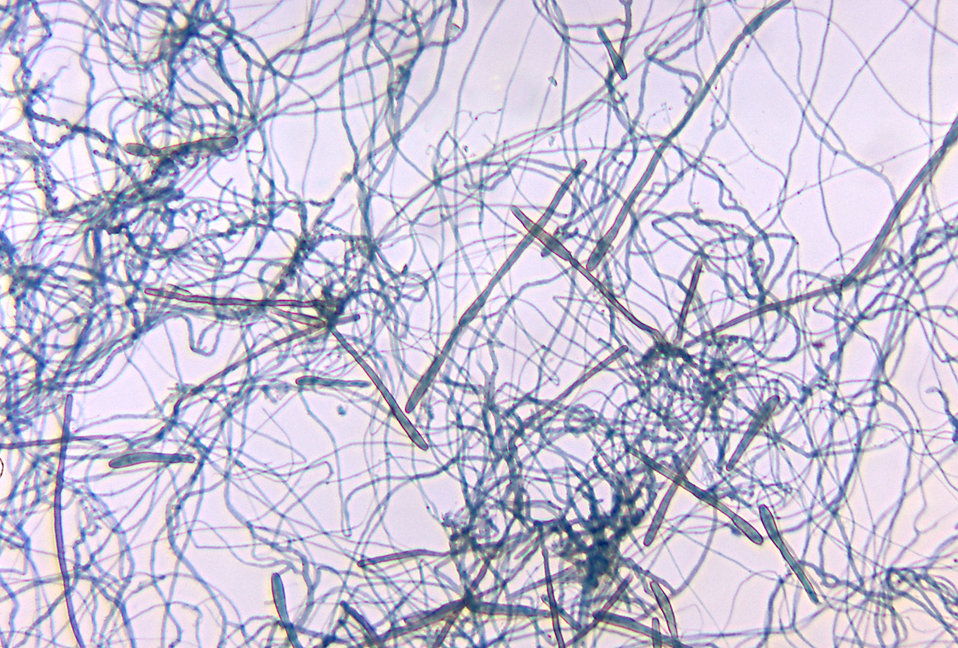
This slide culture photomicrograph depicts the appearance of the fungal organism Corynespora cassiicola.